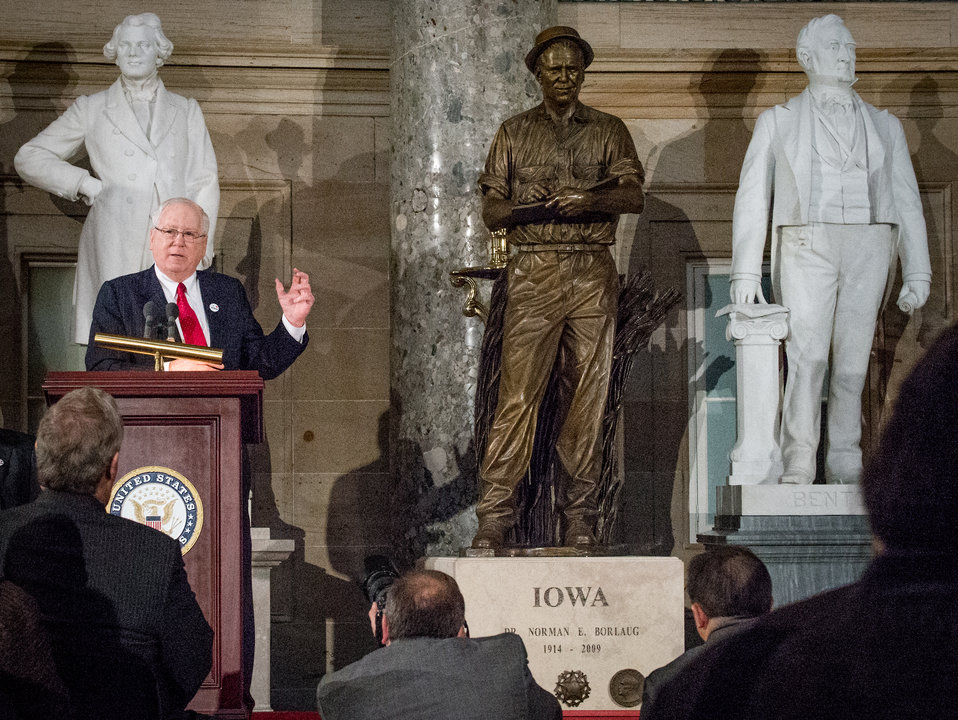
Borlaug Statue Committee Ambassador Kenneth M. Quinn speaks at the dedication of the Dr. Norman Borlaug statue in the National Statuary Hall at the U. S. Capitol in Washington, D.C. on Tuesday, Mar. 25, 2014. Today commemorates 100 years since Dr. Borlaug’s birth. Through his scientific and humanitarian achievements, Nobel Laureate Dr. Norman E. Borlaug (1914-2009) has been credited with saving millions of people from starvation in developing countries. His collaborative work with scientists in Mexico on a high-yielding, disease resistant dwarf wheat sparked the Green Revolution of the 1960s. The National Statuary Hall Collection in the U.S. Capitol is composed of statues donated by individual states to honor persons notable in their history.